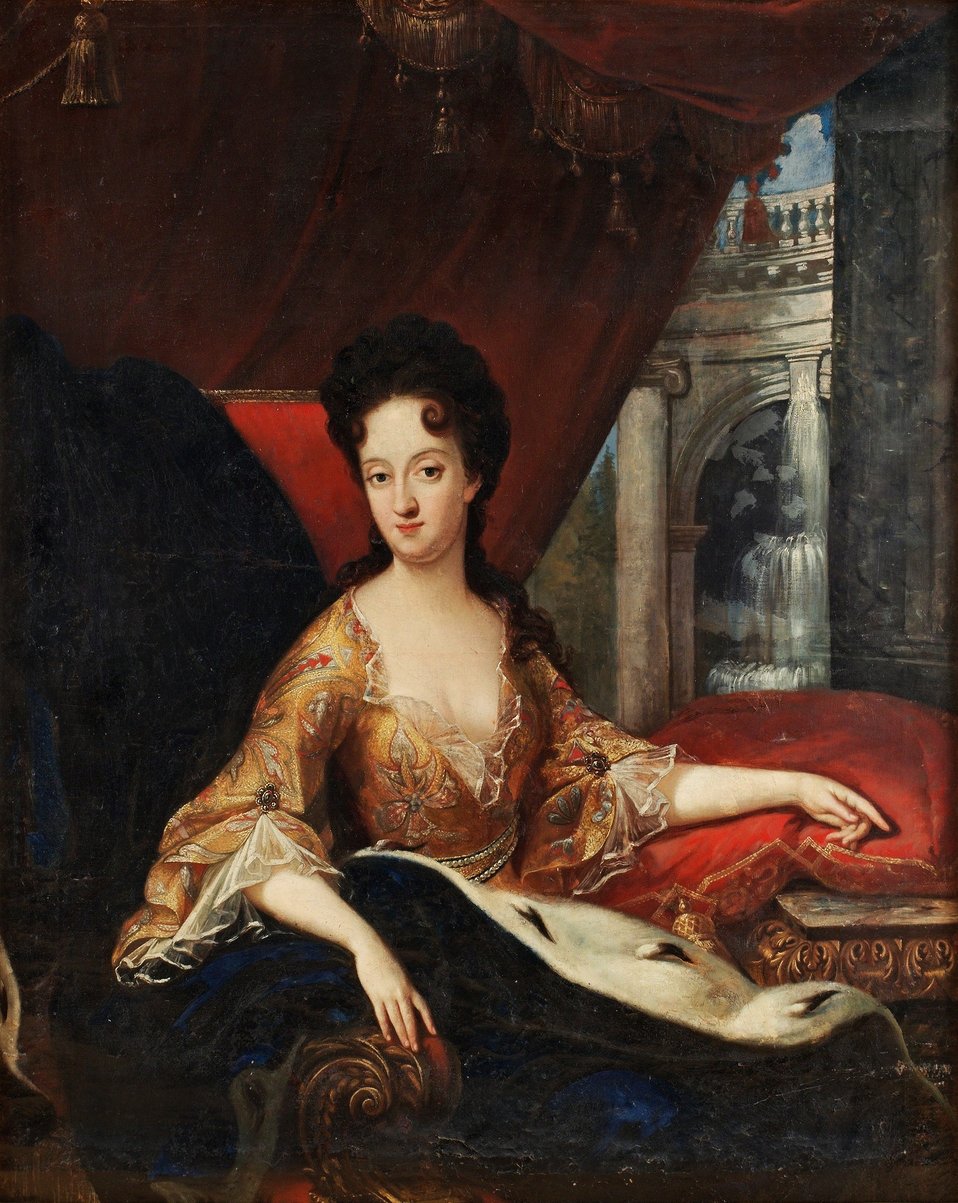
David von Krafft (ateljé) - Drottning Ulrika Eleonora dy